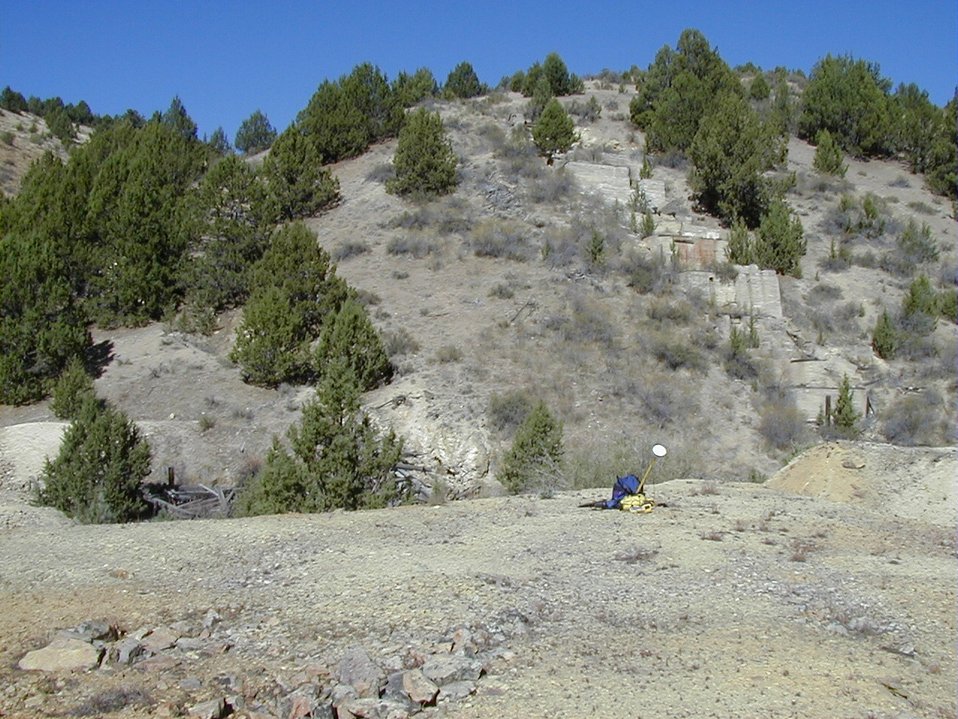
Demmings Mine, Millsite on North Fork Boulder Creek in Owyhees Lower Snake River District LSRD